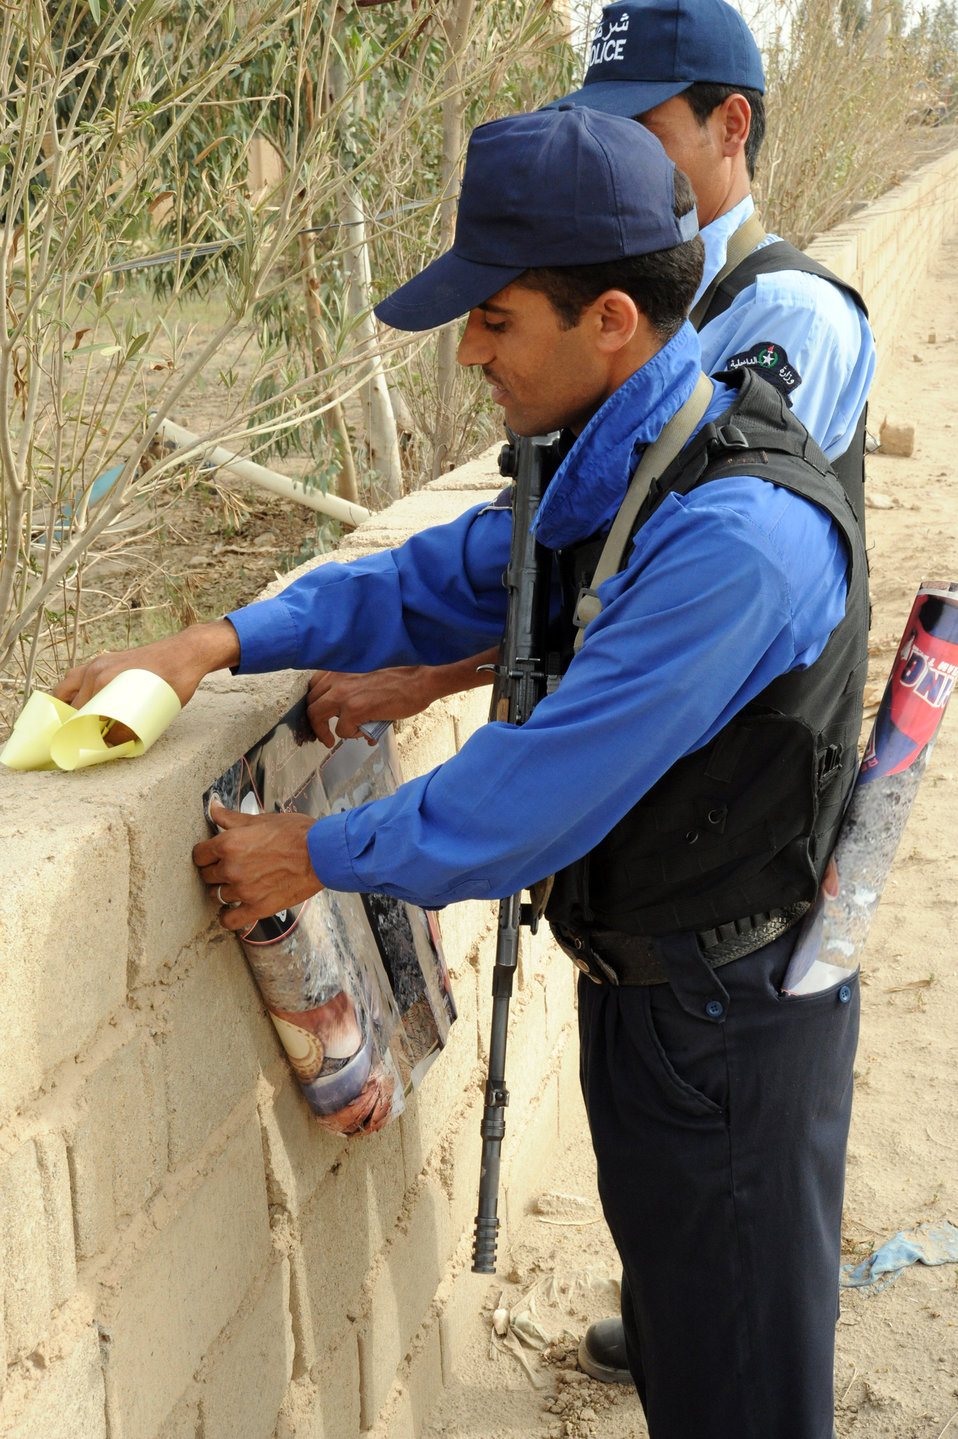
Security forces help promote Iraqi community policing

Two members of an Iraqi police department place posters on a community wall during a joint presence patrol April 4, 2010, near Rufush, Iraq.